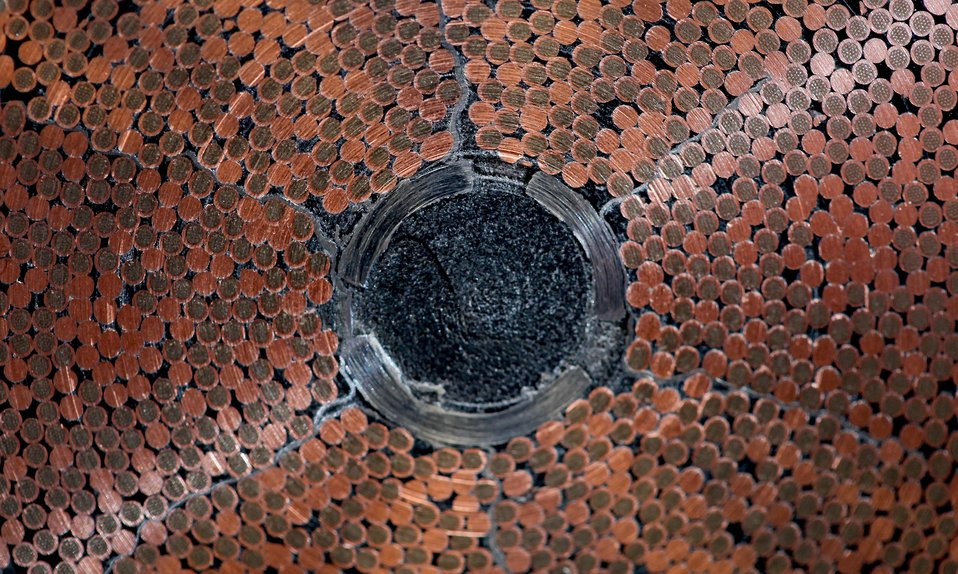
CLOSE-UP OF A COMPACTED SPLINTERED JOINT DEVELOPED AT OAK RIDGE NATIONAL LABORATORY FOR THE INTERNATIONAL EXPERIMENT REACTOR (ITER) CENTRAL SOLENOID MAGNET SYSTEM.

Individual superconducting strands, interspersed with copper strands, surround the central cooling channel.